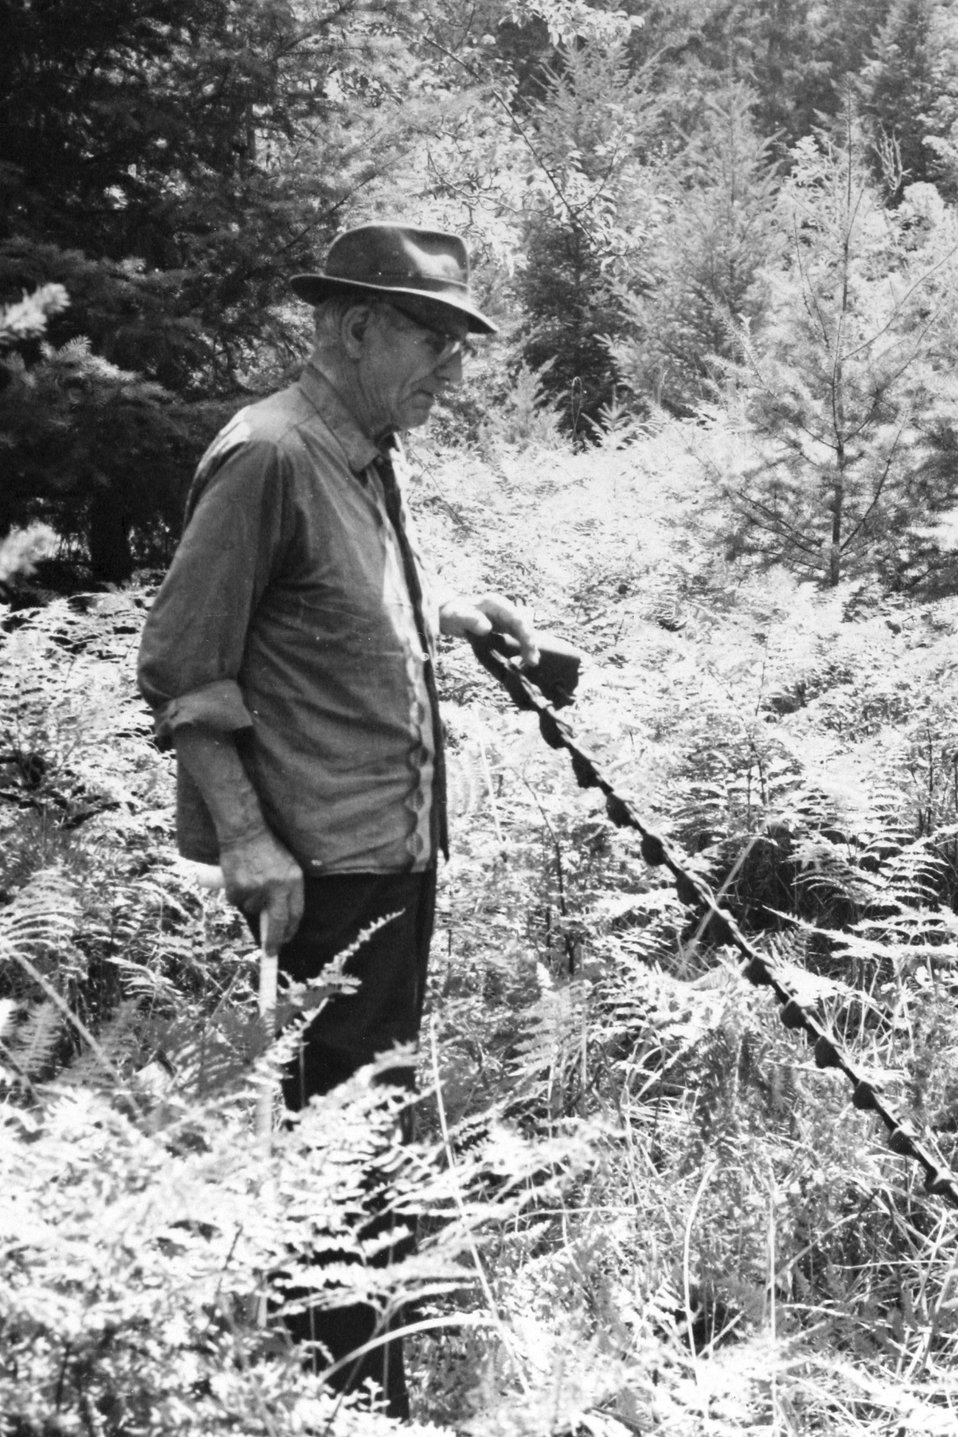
Ivin Billings C. 1977